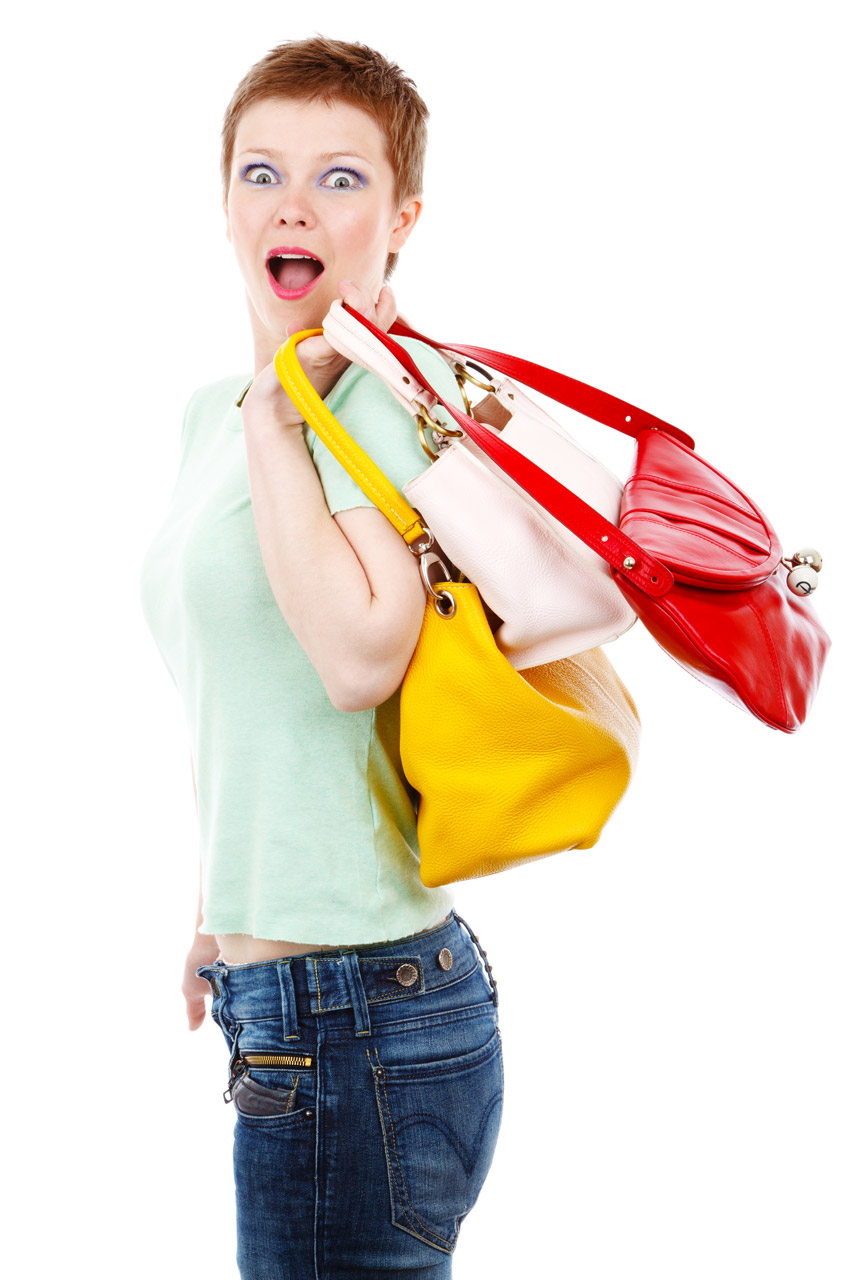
Sale is on

Happy young woman with colorful bags is looking forward to sales. isolated on white background - jana svojsova.